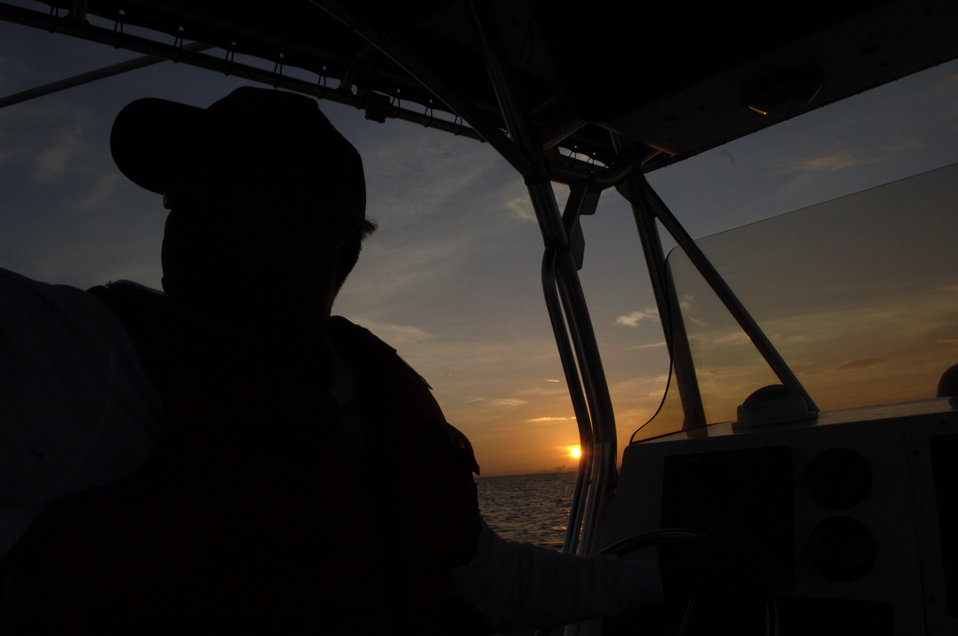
Bay watch

Staff Sgt. Randall Resto polices Tampa Bay Nov. 27 near MacDill Air Force Base, Fla. Sergeant Resto is a member of the 6th Security Forces Squadron boat patrol, one of the units in the Air Force to have a boat patrol and the only one to conduct patrols overnight.